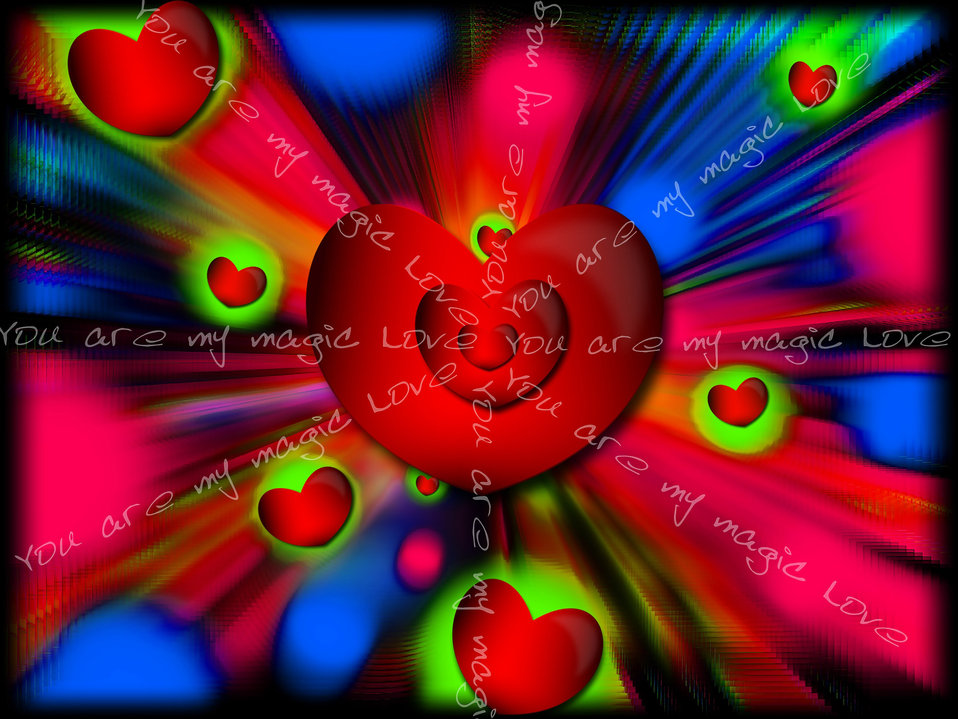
You are my love magic

Background.